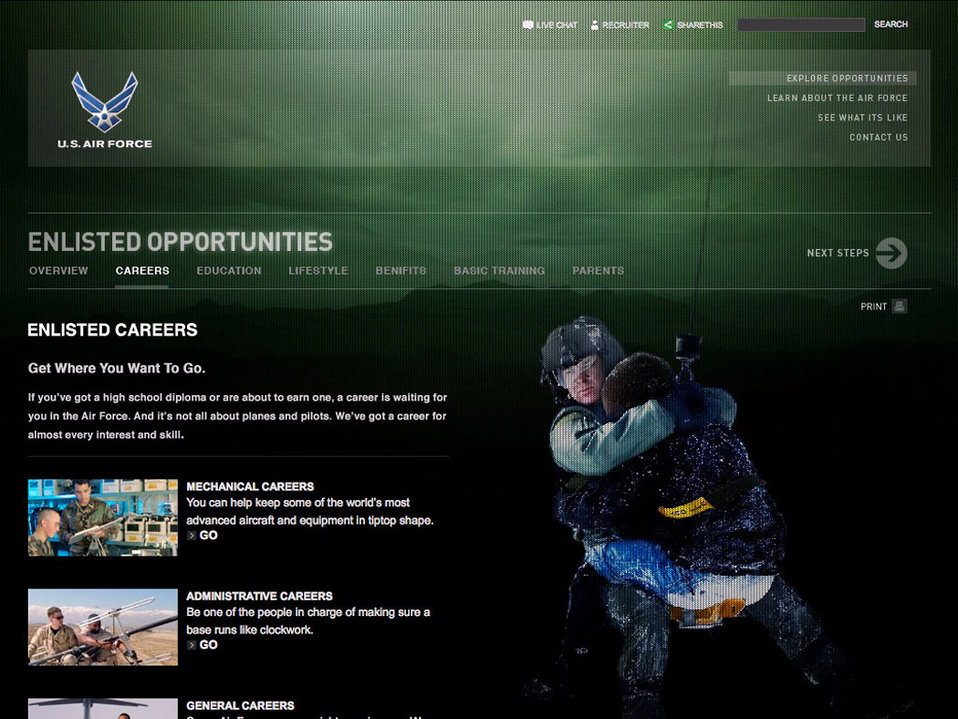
Air Force recruiting Web site redesign launched

Incorporating the latest Internet technologies while reflecting the way ahead for the service, Air Force Recruiting Service officials launched their redesigned Web site Dec. 15 at airforce.com.